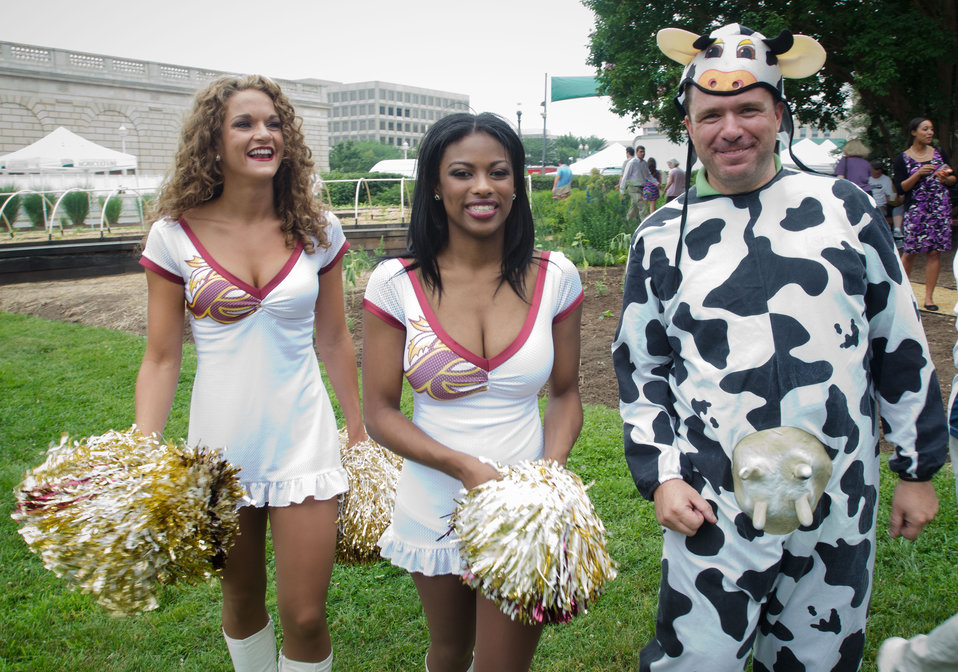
Washington Redskins cheerleaders and Agriculture Marketing Service, Dairy Program Marketing Research Specialist John Galbraith, helped attract attention to many activities during the U.S. Department of Agriculture (USDA)Fresh vegetables from C & T Produce at the U.S. Department of Agriculture (USDA) summer farmers market opening of the 17th season at the USDA Whitten Building east parking lot in Washington, D.C., on Friday, May 31, 2012. This year's theme is Grow, Healthy, Eat Healthy & Be Healthy. USDA and Fuel Up to Play 60, in partnership with the National Dairy Council and the National Football League, invited residence, visitors and local school children to participate in opening day activities. Hip Hop Public Health featuring Easy A.D. from Cold Crush Brothers and disk jockey Artie Green play music and invite people to get up on stage to dance or hula hoop to get active. D.C. Truck Farm help people know from what plants, that certain herbs, fruit and produce come from by giving tail-gate tours of the garden growing in the bed of their pickup truck. The Peoples Garden Initiative and USDA Executive Master Gardeners gave away a variety of fruit and produce seedlings to include the Tomato ‘Abraham Lincoln’ in celebration of the USDA 150th Anniversary and to share their harvest. New features for 2012 include an on-site sign language interpreter, a hand washing station, and a USDA-certified organic vendor. Other products selling today are fresh fruits, vegetables, herbs, baked goods, meats, kettle popcorn, local honey, hand-made soap and more.